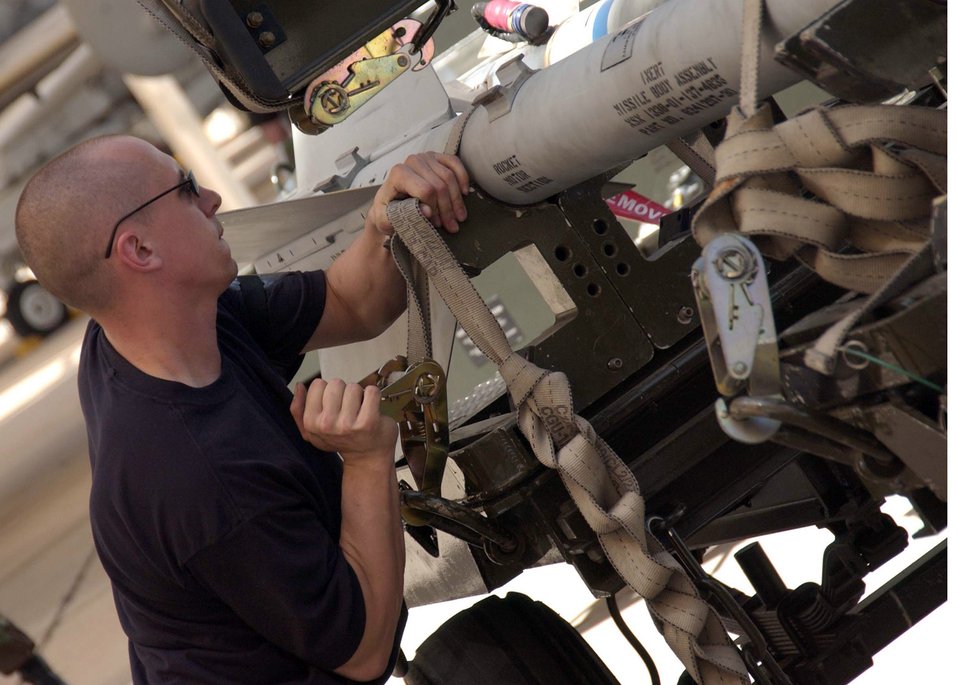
Exercise Bushwacker 06-02

An Airman from the 355th Aircraft Maintenance Squadron secures an AIM-9 during Exercise Bushwacker 06-02, on Friday, March 31, 2006, at Davis-Monthan Air Force Base, Ariz. The operational readiness exercise helps ensure Airmen are ready to deploy.